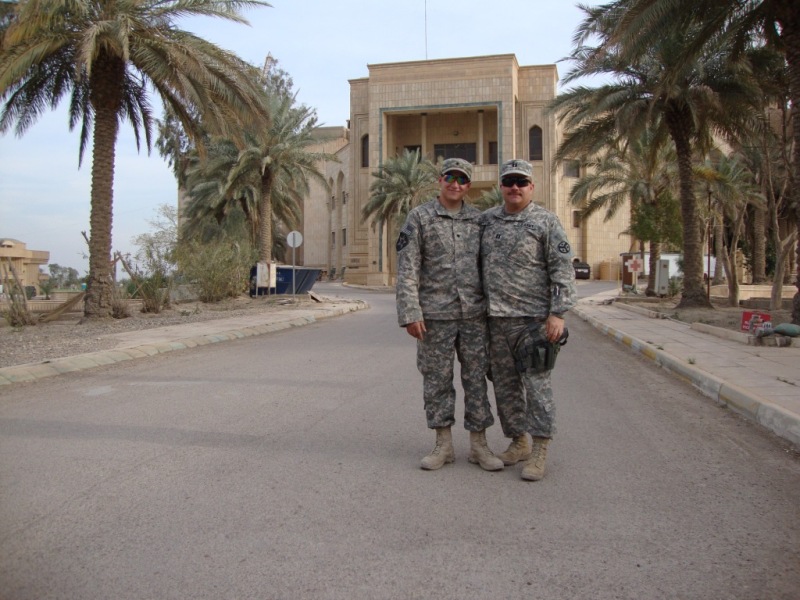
Portsmouth - Joe Wise

Joe Wise, right, stands with his son, Tommy, outside a palace in Baghdad in March 2010. The father and son were stationed with separate military units 60 miles apart when arrangements were made for them to see each other for the first time in more than a year.

During Wise's second tour of duty with the U.S. Army National Guard in Iraq, he had one day off and was reunited with his son, Tommy, who was serving in the U.S. Army. They had not seen each other in more than a year.

Wise is a superintendent on several projects at the Portsmouth Site for DOE cleanup contractor LATA/Parallax Portsmouth.